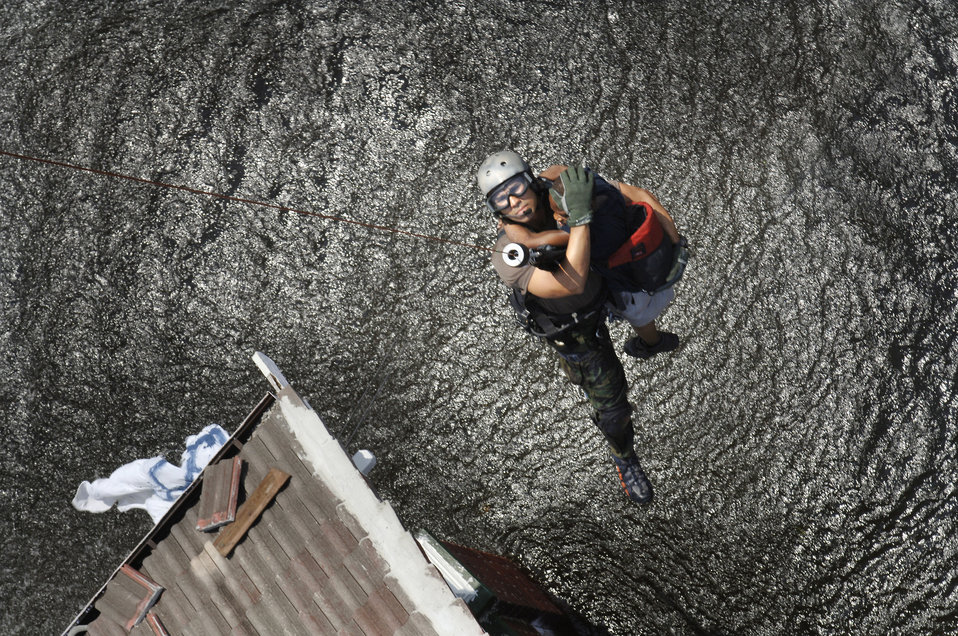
Hoist rescue

NEW ORLEANS -- Tech. Sgt. Lem Torres and a young boy are lifted to safety from the roof of the child's flooded home. The pararescueman is from 38th Rescue Squadron at Moody Air Force Base, Ga., and is deployed to New Orleans for Hurricane Katrina search-and-rescue operations.